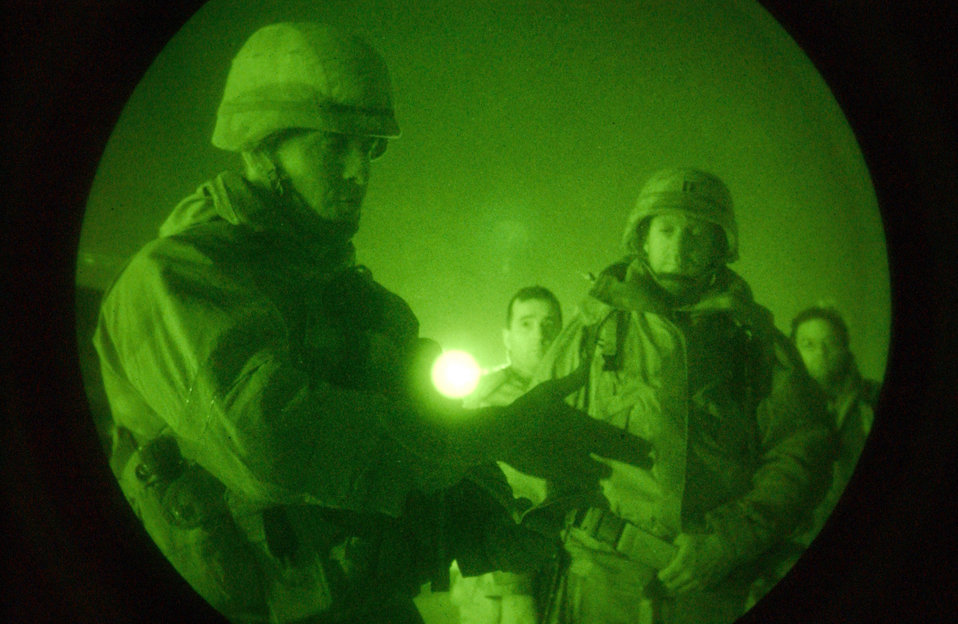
Ground rules

OPERATION IRAQI FREEDOM -- Master Sgt. Todd Fuller briefs troops on procedures for a convoy heading out to Iraq from a forward deployed Operation Iraqi Freedom location March 26. Fuller is a security forces member from 332nd Air Expeditionary Wing.